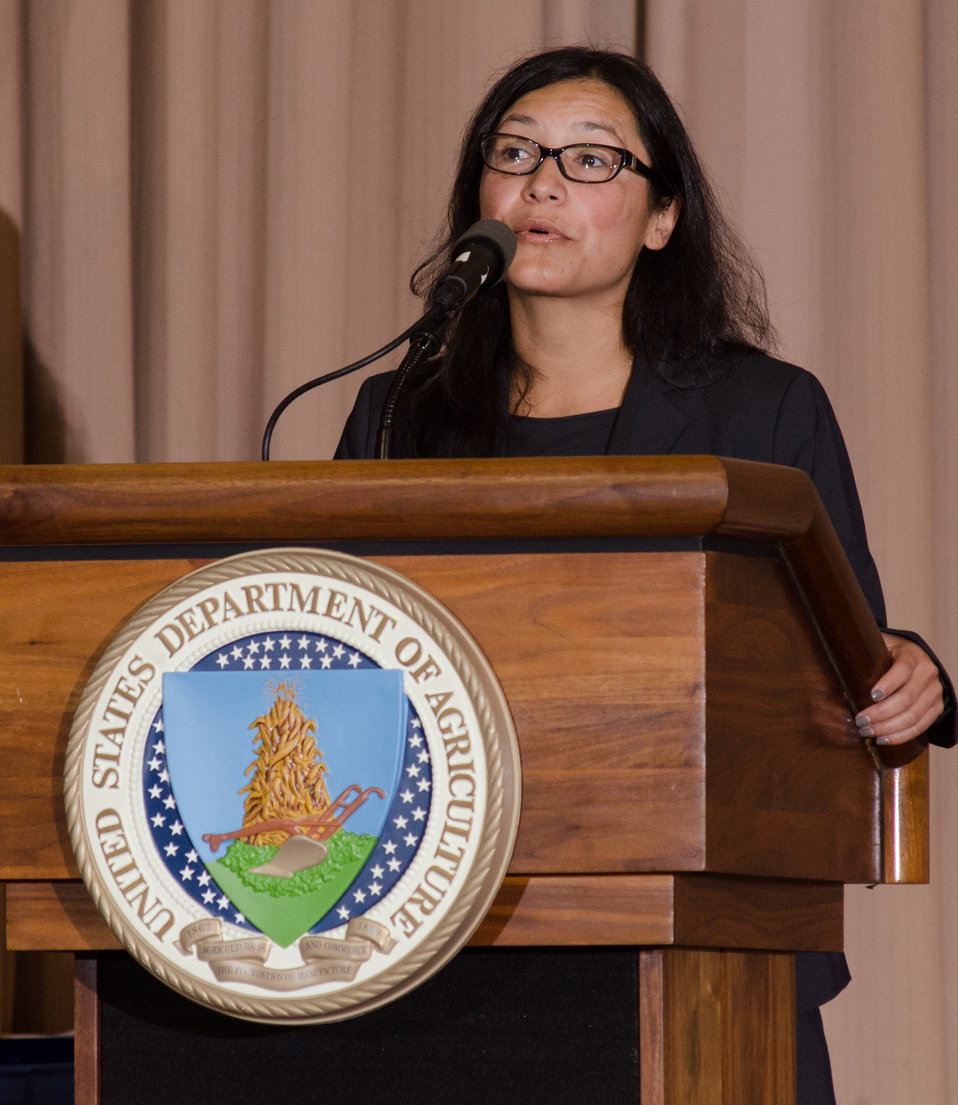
White House Office of Public Engagement Associate Director Julie Chavez Rodriguez speaking during the U.S. Department of Agriculture (USDA) 2013 National Hispanic Heritage Month ”Hispanics: Serving and Leading our Nation with Pride and Honor,” on Thursday, Sept. 19, 2013, in the Jefferson Auditorium, USDA Headquarters, Washington, D.C.